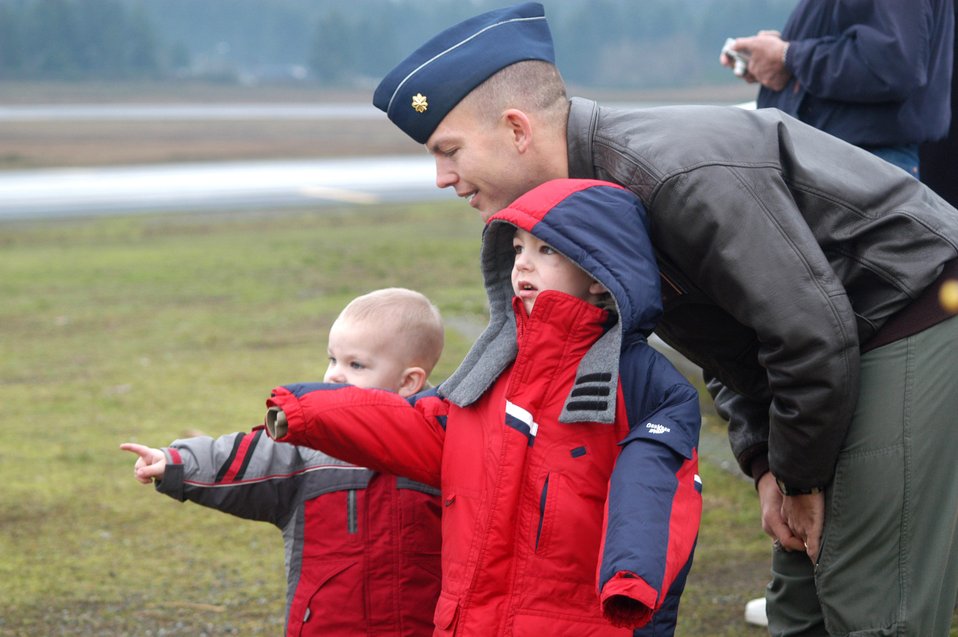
10 Globemaster IIIs fly in formation over Washington state

Maj. Jim Dittus and his sons, Josh and Jake, watch a C-17 Globemaster III formation training excercise Dec. 20 at McChord Air Force Base, Wash. Major Dittus is assigned to the 7th Airlift Squadron.